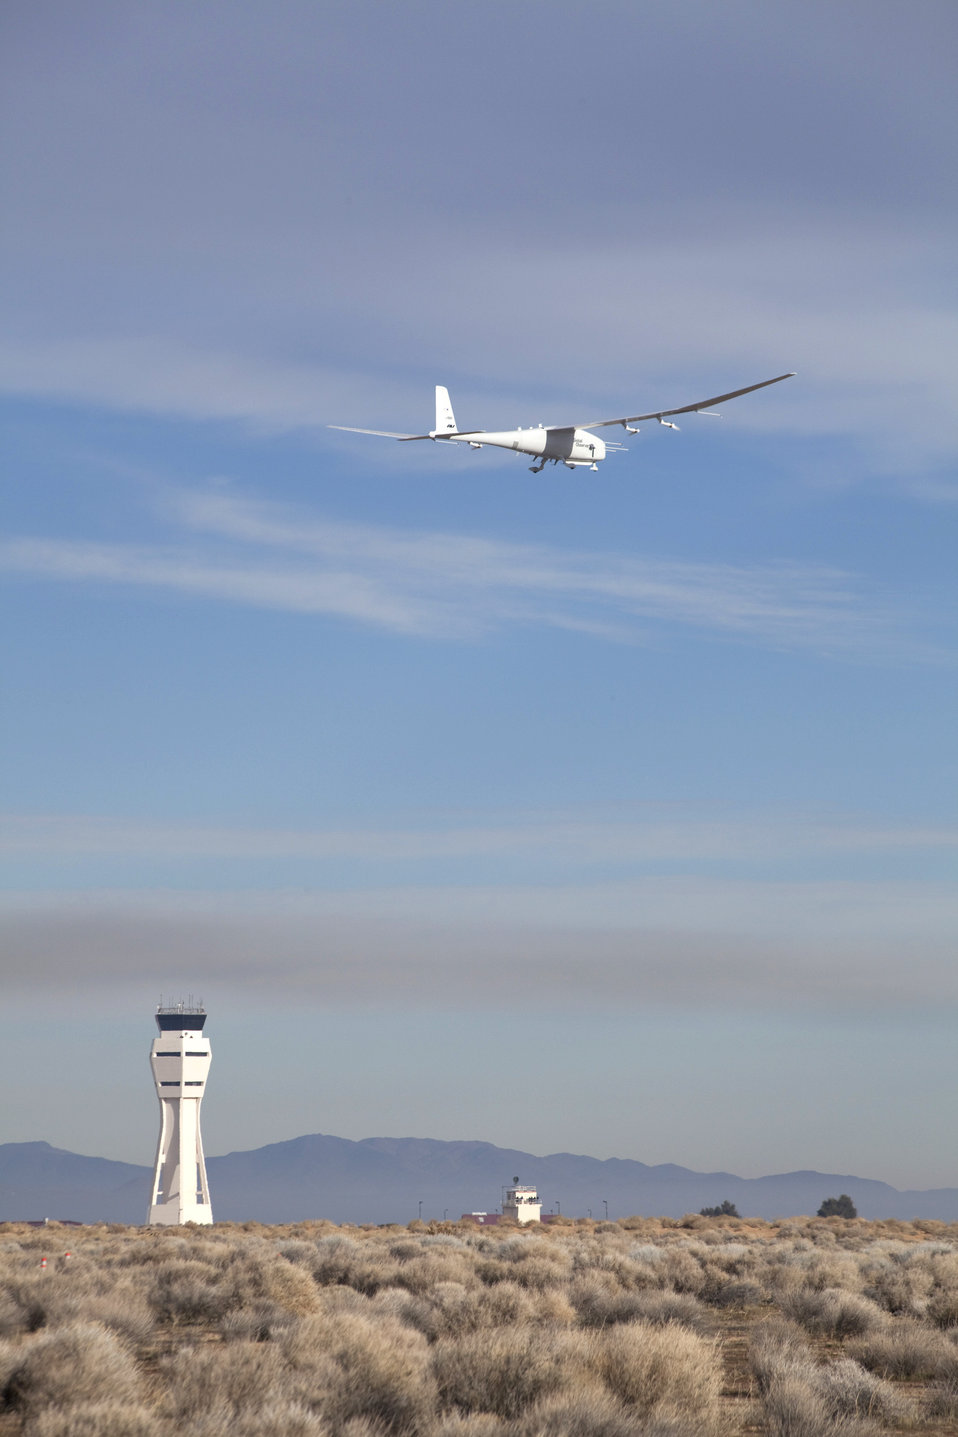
451st AEW CCATT

As a critical care air transport team member Maj. (Dr.) George Kotti makes notes on a patient's medical chart inside a C-130H-Hercules Jan. 5, 2011. The CCATT is a specialized three-person team that recreates an intensive care unit environment within an aircraft during aeromedical evacuations. Dr. Kotti is assigned to the 451st Aeromedical Evacuation Squadron .